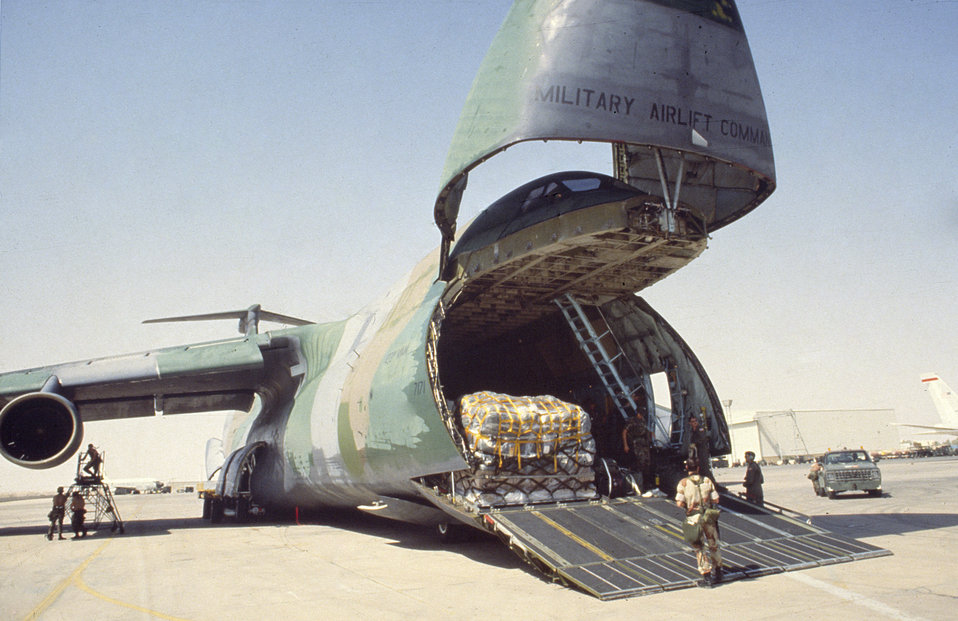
A C-5 being loaded

1990's -- A C-5 being loaded for an airlift to deliver cargo to troops in the desert during Desert Storm.